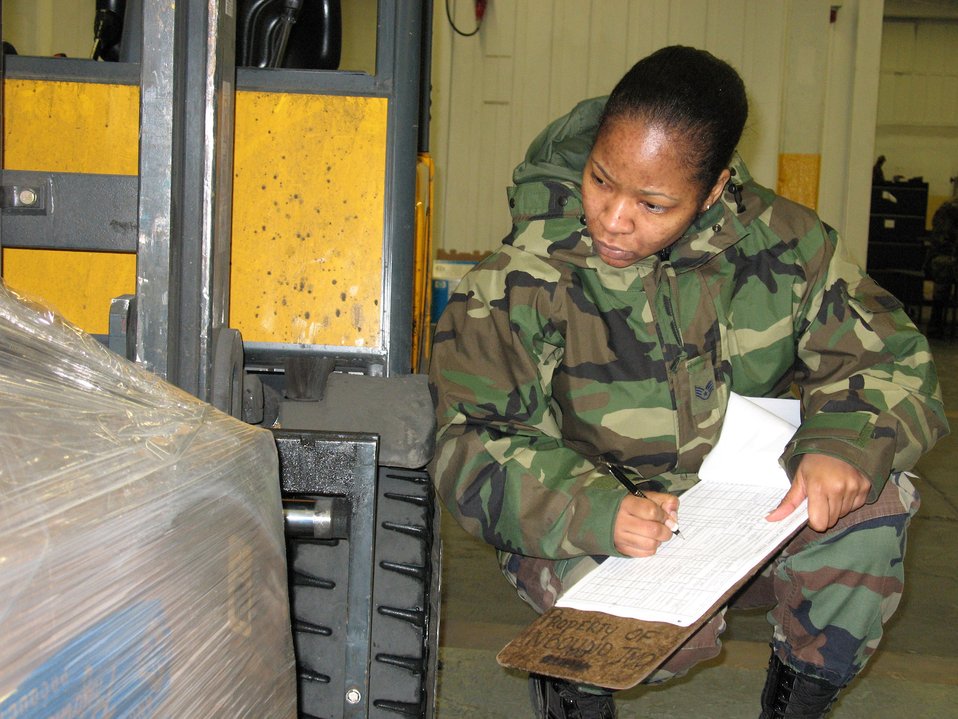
Ramstein inbound section delivers

Staff Sgt. Niki Lee checks a pallet Feb. 14 at the Cargo Movement Center inbound section at Ramstein Air Base, Germany. Every year the inbound section receives approximately 30,000 shipments from around the world.